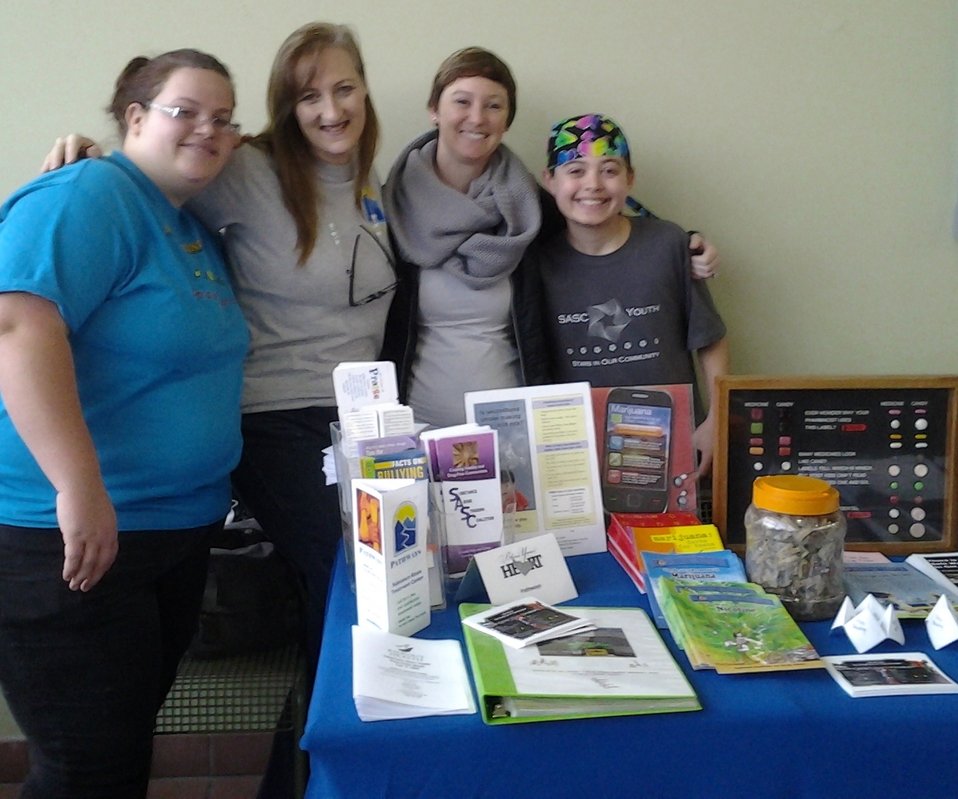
Yuba City's NDFW 2013 Event

Yuba City, CA. Yuba-Sutter Pathways & Substance Abuse Steering Coalition partnered up to offer a booth at the “Bless Your Heart Health Fair “in the Yuba-Sutter Mall.